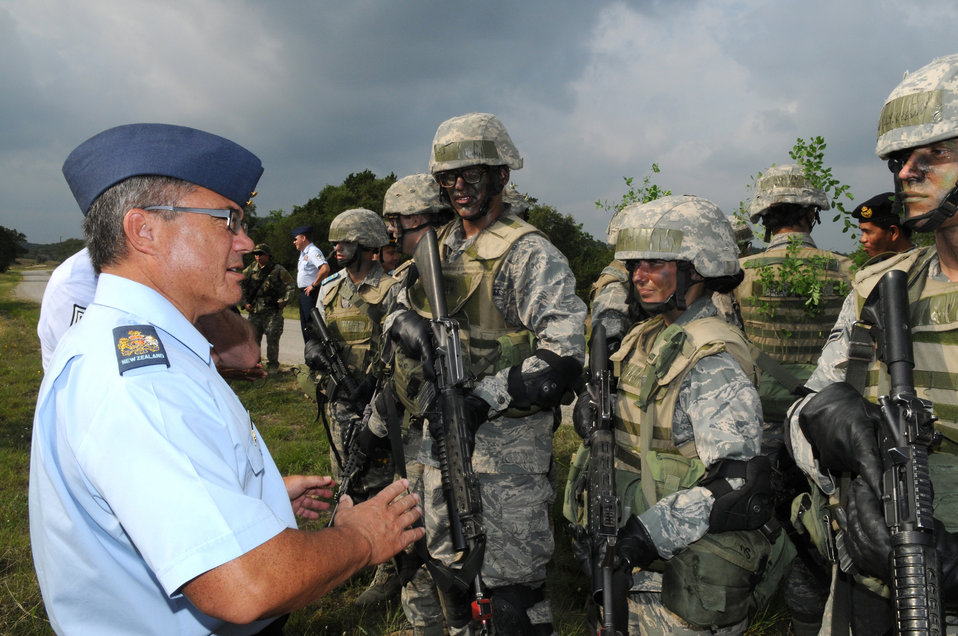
Senior enlisted leaders strengthen international bonds

New Zealand air force Chief Master Sgt. Keith Gell speaks with U.S. Air Force trainees at Camp Bullis, Texas, during the 2009 Worldwide Senior Enlisted Leaders visit May 12-15. The visit was hosted by U.S. Air Force senior enlisted leaders to give their foreign counterparts a look at a U.S. Air Force enlisted member's career from start to finish.